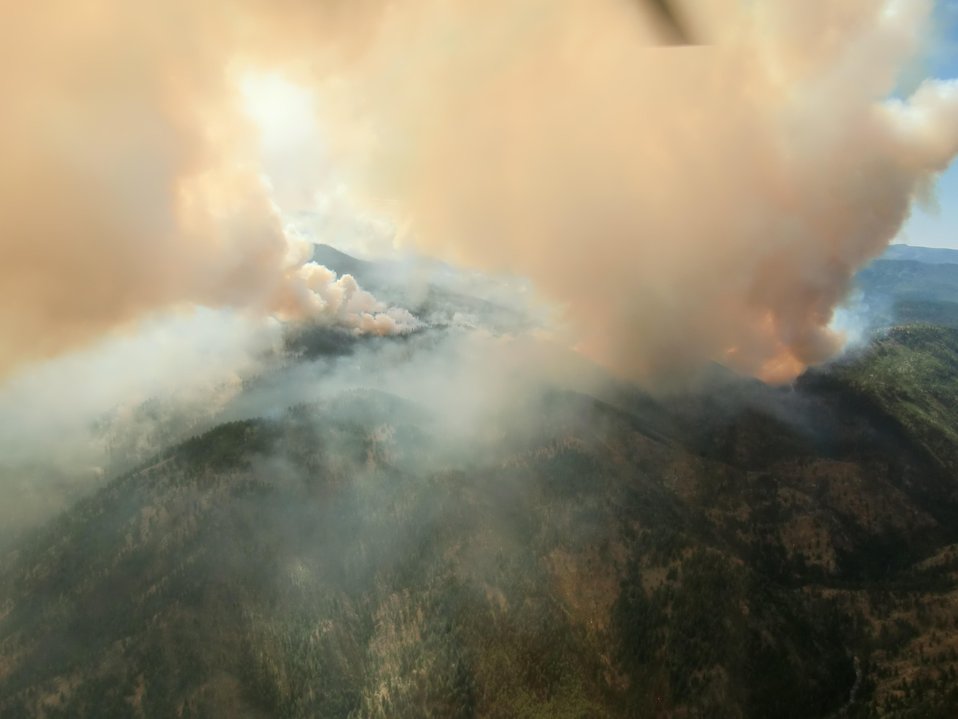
The Gold Pan Fire in the Bitterroot National Forest near Conner, MT began by lightning on Jul. 16, 2013 by lighting have consumed approximately 16,330 acres.